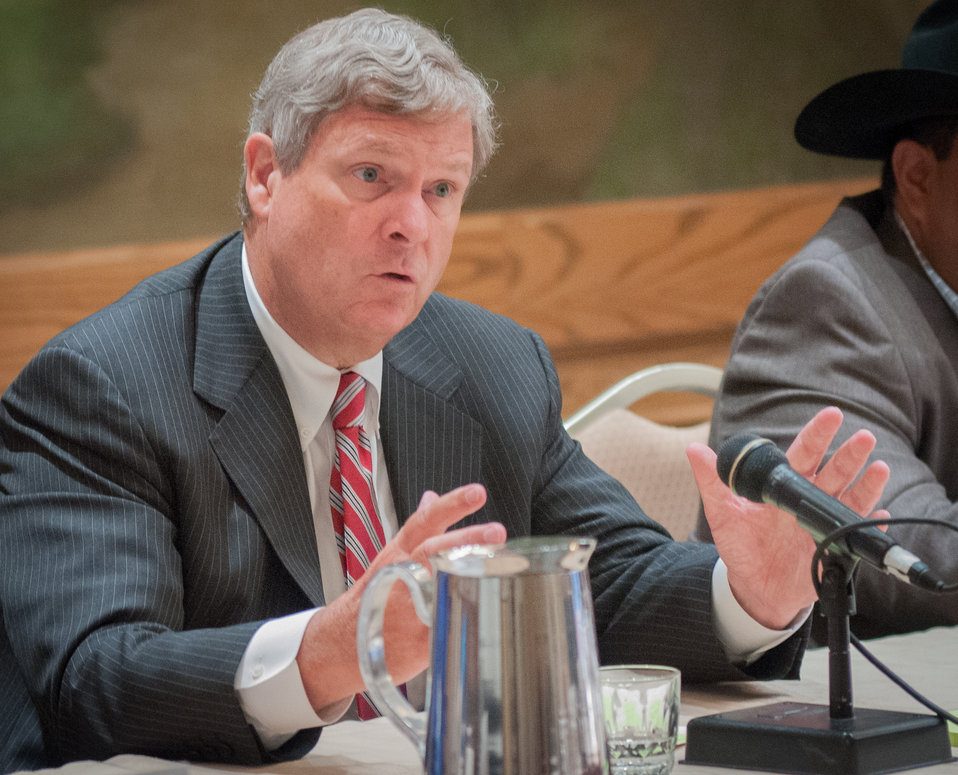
Agriculture Secretary Tom Vilsack, right, at the U.S. Department of Agriculture's (USDA) Council for Native American Farming and Ranching (CNAFR) members, on Monday, Sep. 9, 2013 at the L'Enfant Plaza Hotel, in Washington, D.C. CNAFR was created to advise the Secretary on ways to eliminate barriers to participation for Native American Farmers and Ranchers in USDA programs. The Council was established as part of the Keepseagle settlement, and is conducted under the oversight of USDA's Office of Tribal Relations, which is part of the Office of the Secretary of Agriculture. Also in attendance is The Director of Tribal Relations Leslie Wheelock, Agriculture Assistant Secretary for Civil Rights Joe Leonard, Jr. Ph.D., Farm Services Administration Administrator Juan M. Garcia and Deputy Administrator for Farm Loans Programs Chris Beyerhelm.